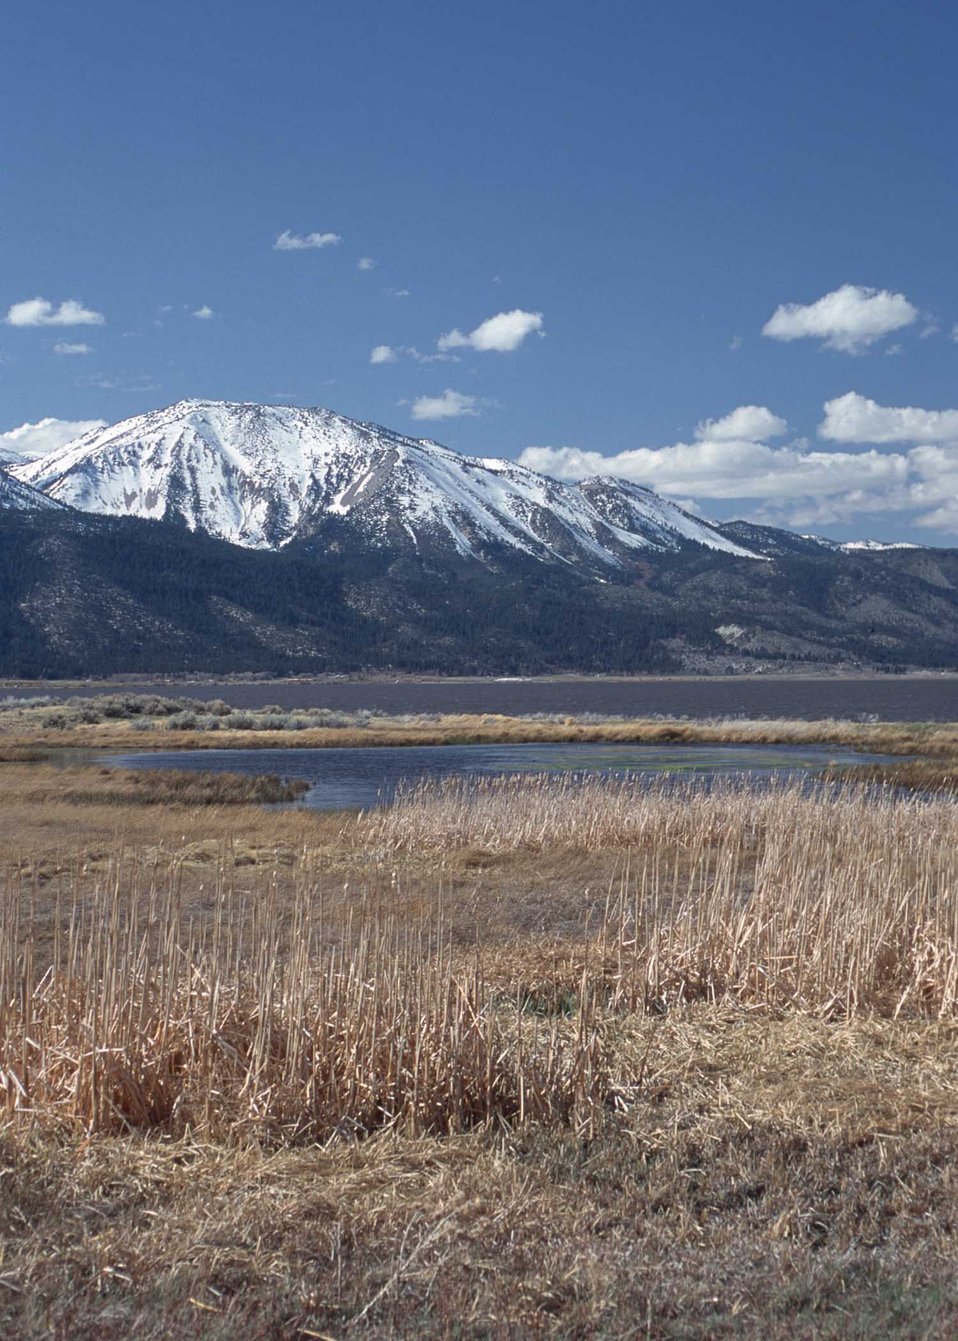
Washoe Lake, Washoe County, NV; Sierra Nevada Mountains in background.